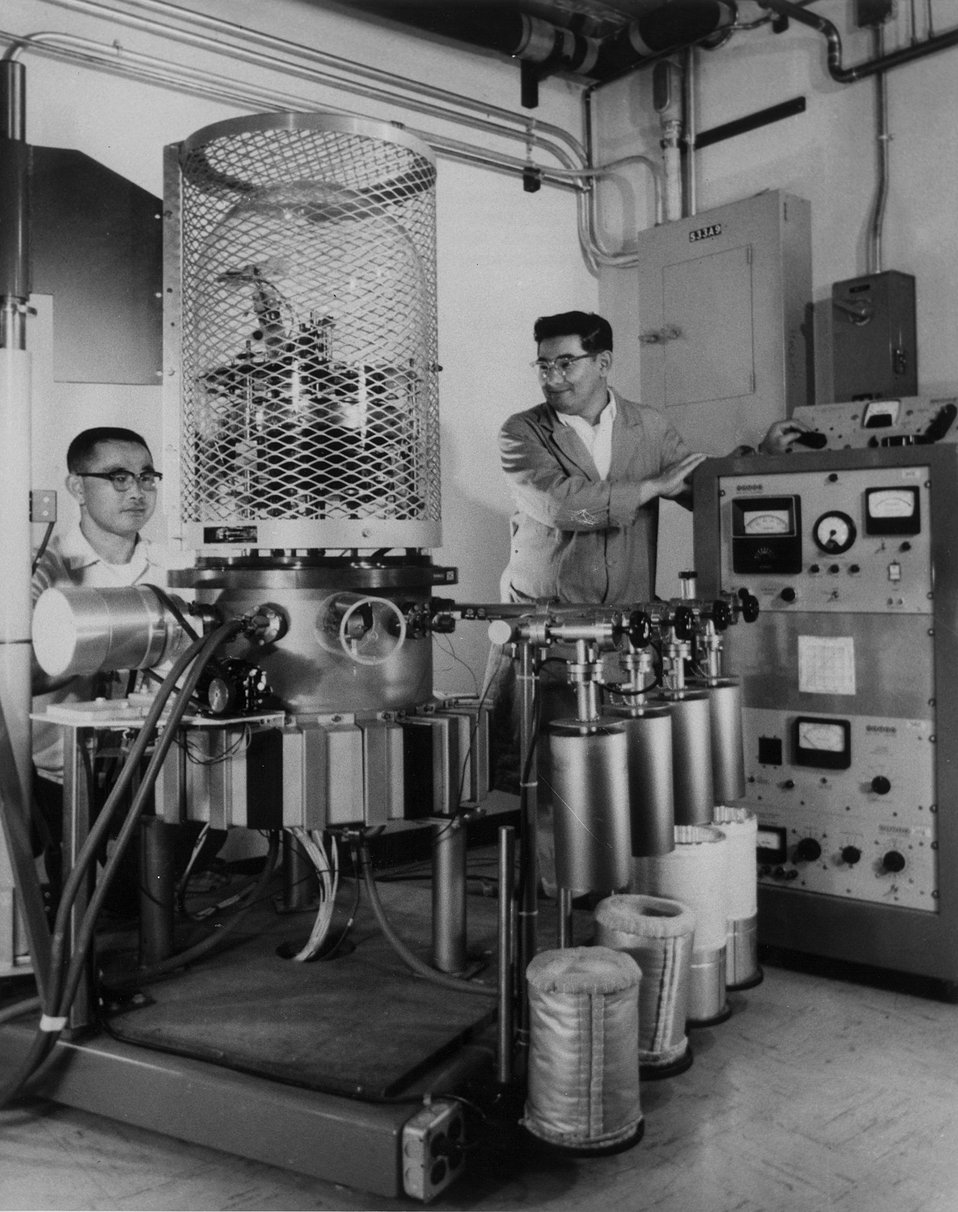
Vacuum techniques for accelerators were developed. Operated for the AEC by the University of California-- by pushing known vacuum principles to limits technicians had not thought possible. Circa 1966.